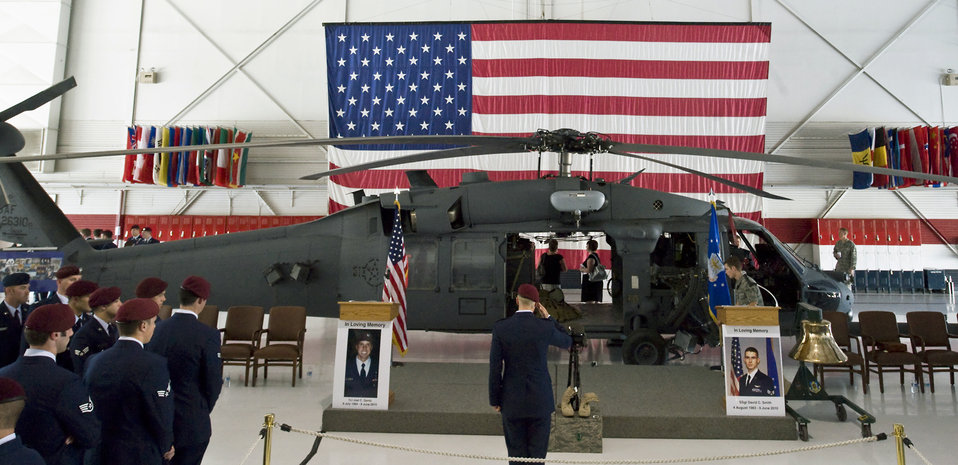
Nellis Airmen honor fallen comrades

A pararescue Airman renders a salute to 1st Lt. Joel Gentz and Staff Sgt. David Smith during a memorial ceremony June 18, 2010, at Nellis Air Force Base, Nev. The two were among four Airmen killed and three wounded when an HH-60G Pave Hawk crashed during a mission in southeastern Afghanistan June 9.